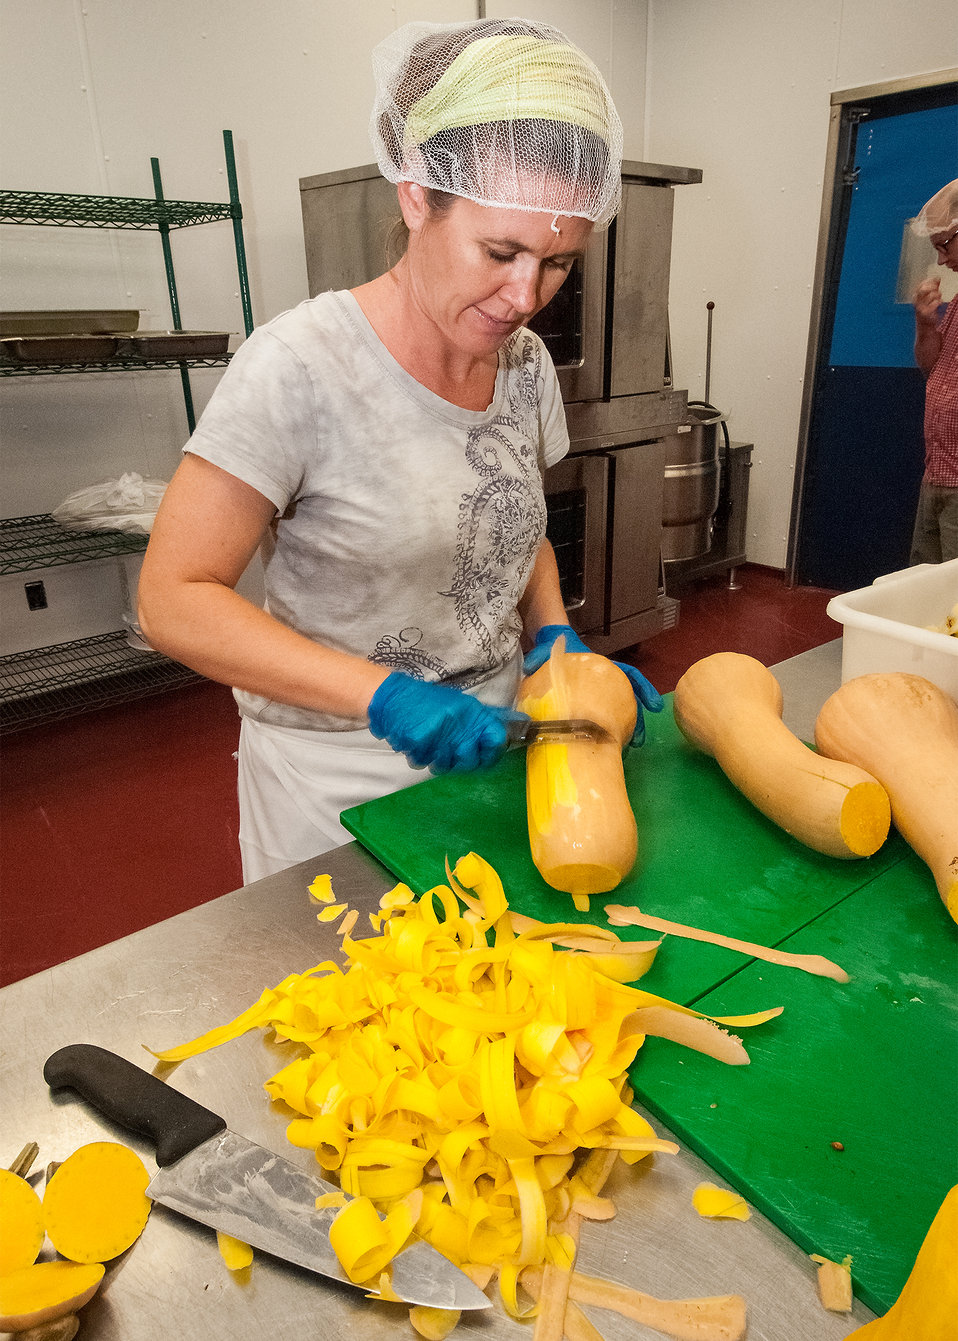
Allyson Spanier peels butternut squash in preparation to be combined with baked apples for her Baked Apple and Squash baby food at the Vermont Food Venture Center in Hardwick, VT. Spanier explains why she started Vermont Baby: “I wanted to provide parents with some unique, healthy, tasty options that they would feel good about feeding to their babies.” Her goals have been met. The baby food she makes is purely Vermont with organic ingredients from local farmers. The Vermont Food Venture Center, a non-profit multi-purpose incubator kitchen and food processing facility operated by the Center for an Agricultural Economy in Hardwick, VT received assistance through a U.S. Department of Agriculture (USDA) Rural Development (RD) Rural Business Enterprise Grant (RBEG). The grant offers farmers in a region of rural America that celebrates food, farm and local economy the tools necessary to convert crops to value added business to start or expand their food-based business with the potential to create jobs and increase economic opportunity on Sep. 19, 2013.